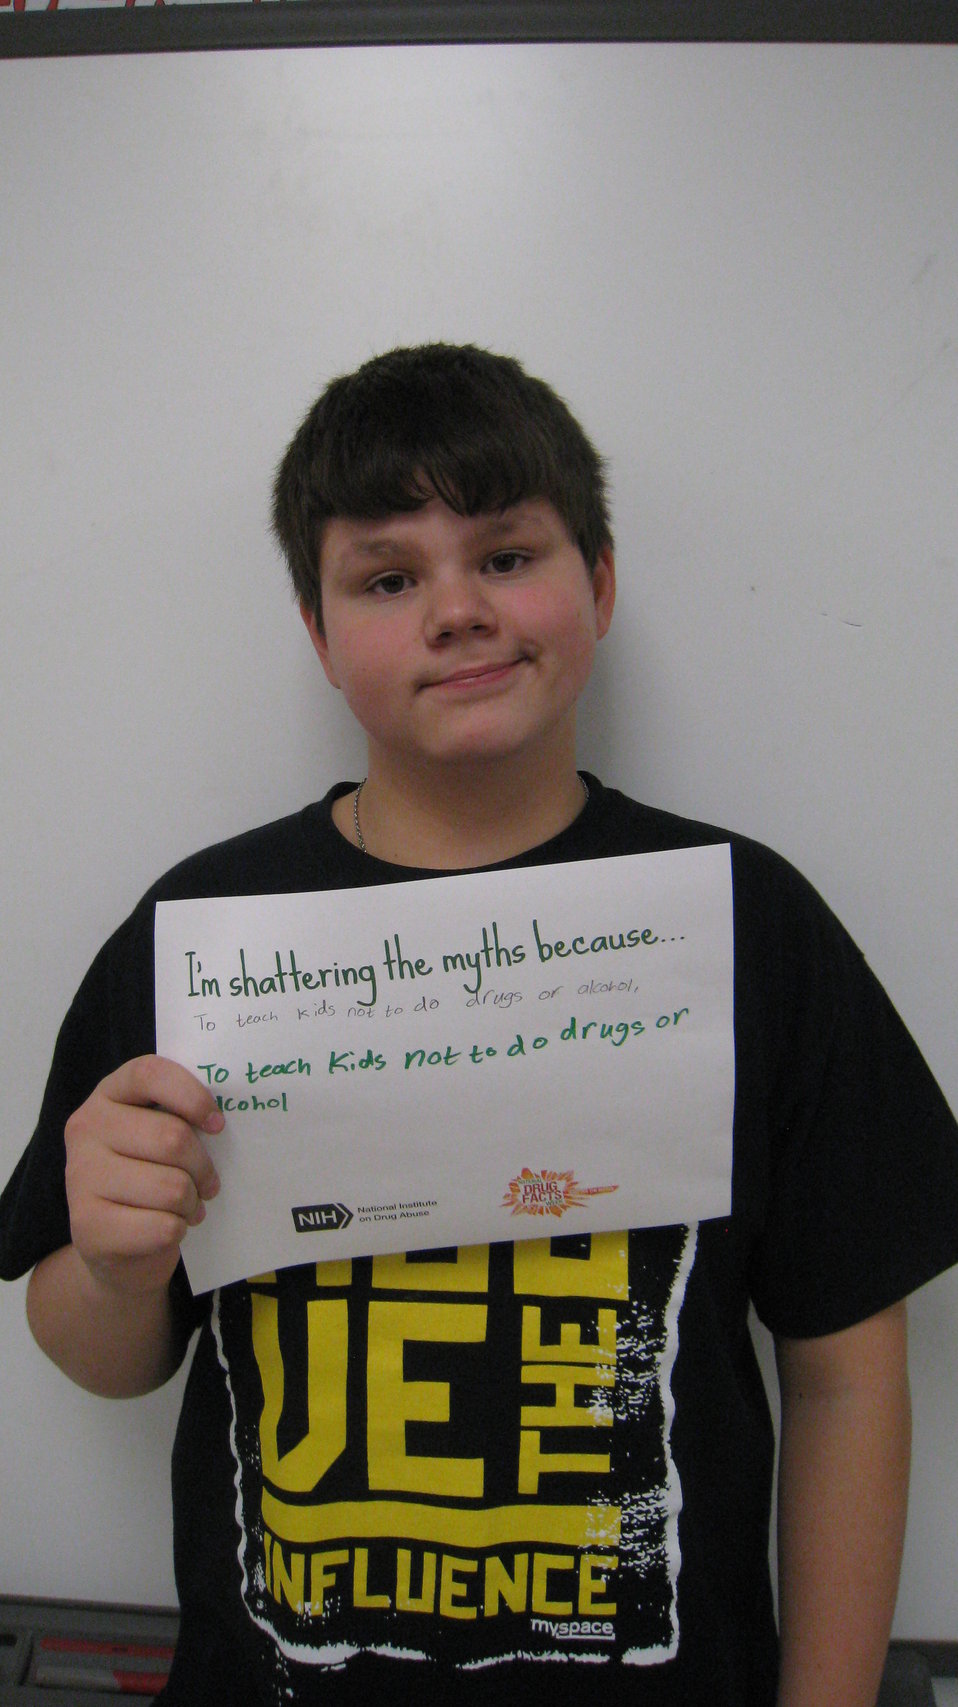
I'm Shattering the Myths Because...

Teenagers from the Van Buren County SAFE Coalition's, Youth Leadership Council (YLC) in Keosauqua, Iowa participate in various events during National Drug Facts Week, 2014.